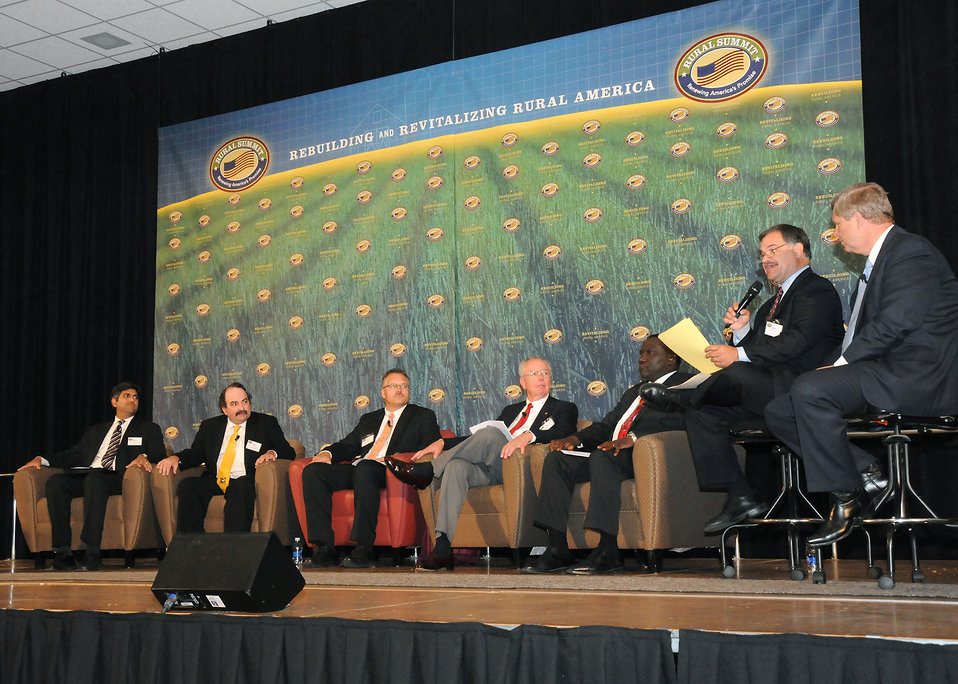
A Dialogue on Rural America was the first discussion panel held at the National Rural Summit held at Jefferson College in Hillsboro, MO., on Thursday, June 3, 2010. (Panelists L to R Chief Technology Officer and Assistant to the President Aneesh Chopra, President of Show Me Energy Steve Flick, President of National Corn Growers Association Darrin Ihnen, Past President of National Association of Conservation Districts John Redding, Mayor of Philadelphia, Mississippi James Young, Agriculture Broadcaster at WGN radio Max Armstrong, and Agriculture Secretary Tom Vilsack). USDA photo 10di1386-158